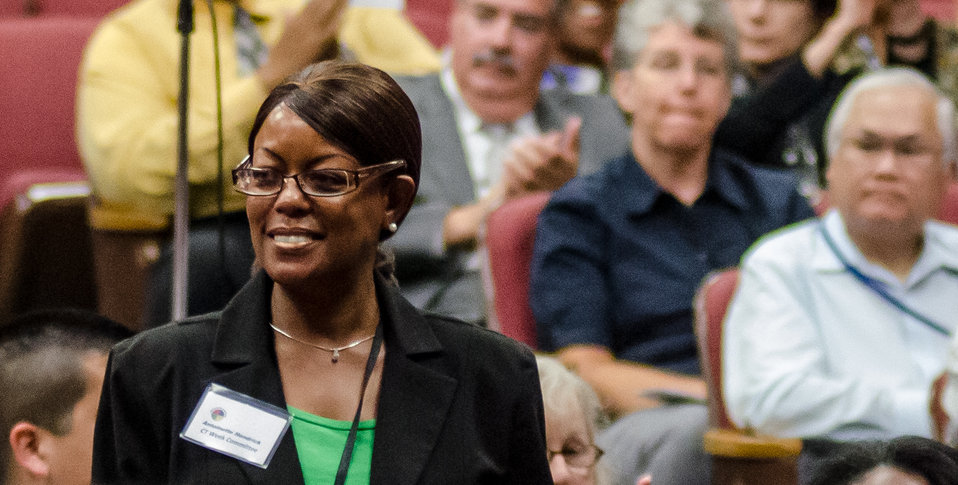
U.S. Department of Agriculture (USDA) employees listen to speakers at USDA’s Rural Development (RD) 2nd Annual Cultural Transformation kickoff opening ceremony and forums, themed “Employees Influencing Change,” on Tuesday, Aug. 13, 2013 USDA in Washington, D.C.